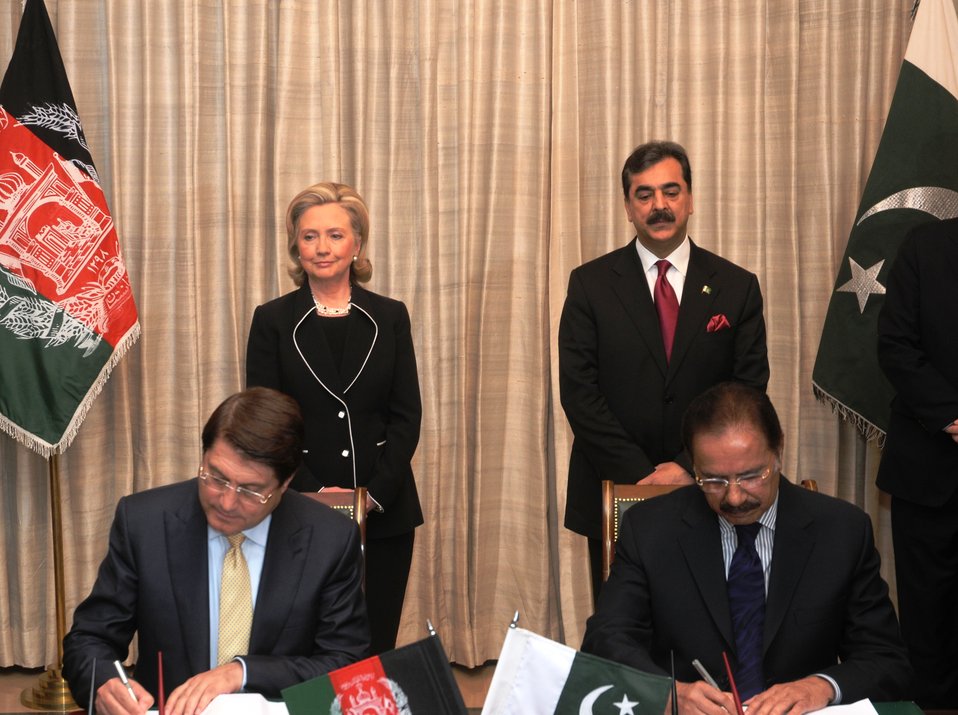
Secretary Clinton and Pakistani Prime Minister Yousaf Raza Gilani Watch Pakistani Federal Minister for Commerce Makhdoom Amin Faheem and Afghan Minister for Trade and Industries Dr. Anwarul Haq Sign a Pakistan-Afghanistan Transit Trade Agreement

U.S. Secretary of State Hillary Rodham Clinton and Pakistani Prime Minister Yousaf Raza Gilani look on as Pakistani Federal Minister for Commerce Makhdoom Amin Faheem and Afghan Minister for Trade and Industries Dr. Anwarul Haq sign a Pakistan-Afghanistan transit trade agreement at the Prime Minister’s House in Islamabad, Pakistan, on July 18, 2010.